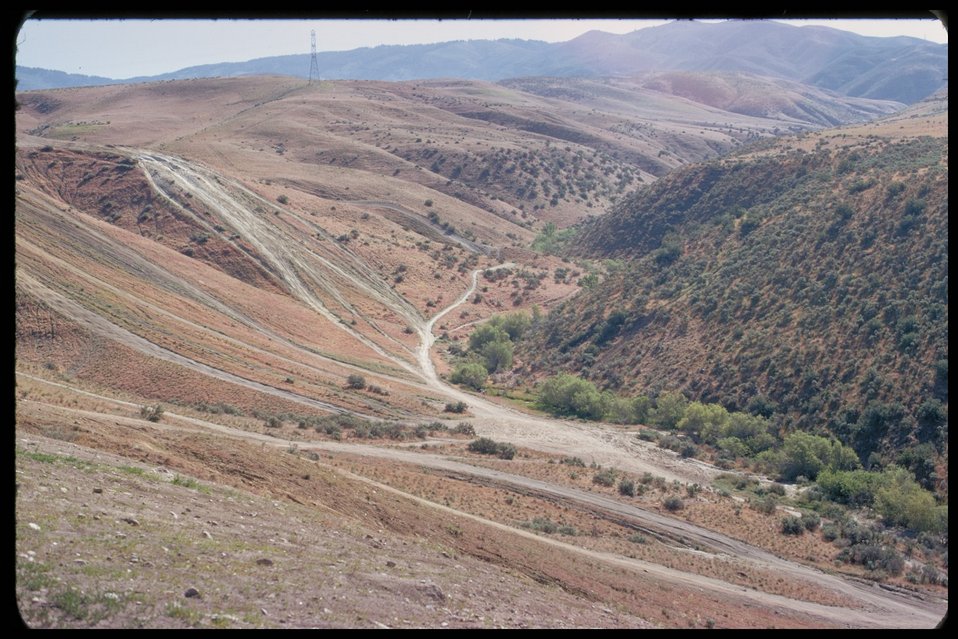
8th St Road trails Boise Front OHV Off Highway Vehicles Four Rivers Field Office LSRD Lower Snake River District